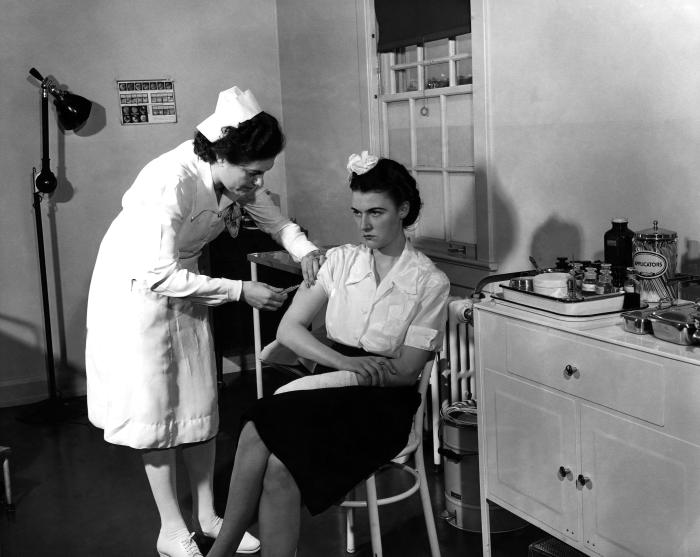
This historical 1943 image, provided by the Center for Disease Control's (CDC), National Institute for Occupational Safety and Health (NIOSH), depicted an inhouse nurse at an Ohio TNT military ordnance manufacturing plant in the process of injecting a fellow female co-worker with an unknown substance. It appears that the injection was of the subcutaneous type, rather than a deeper, intramuscular delivery.